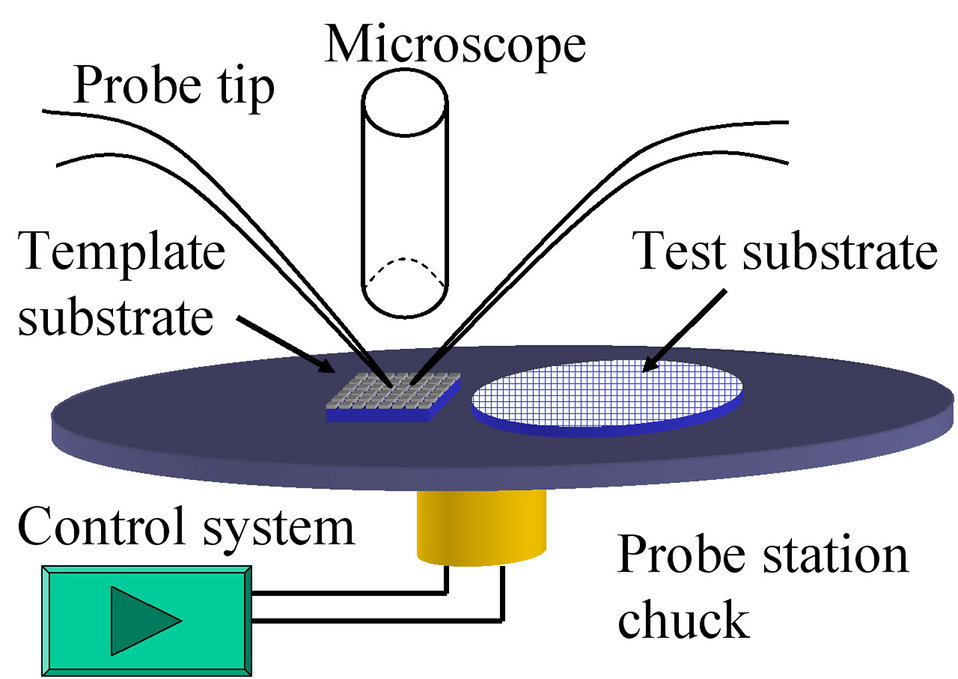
Placing Single Nanowires, NIST Makes the Connection 2

Schematic of NIST single nanowire manipulation system.